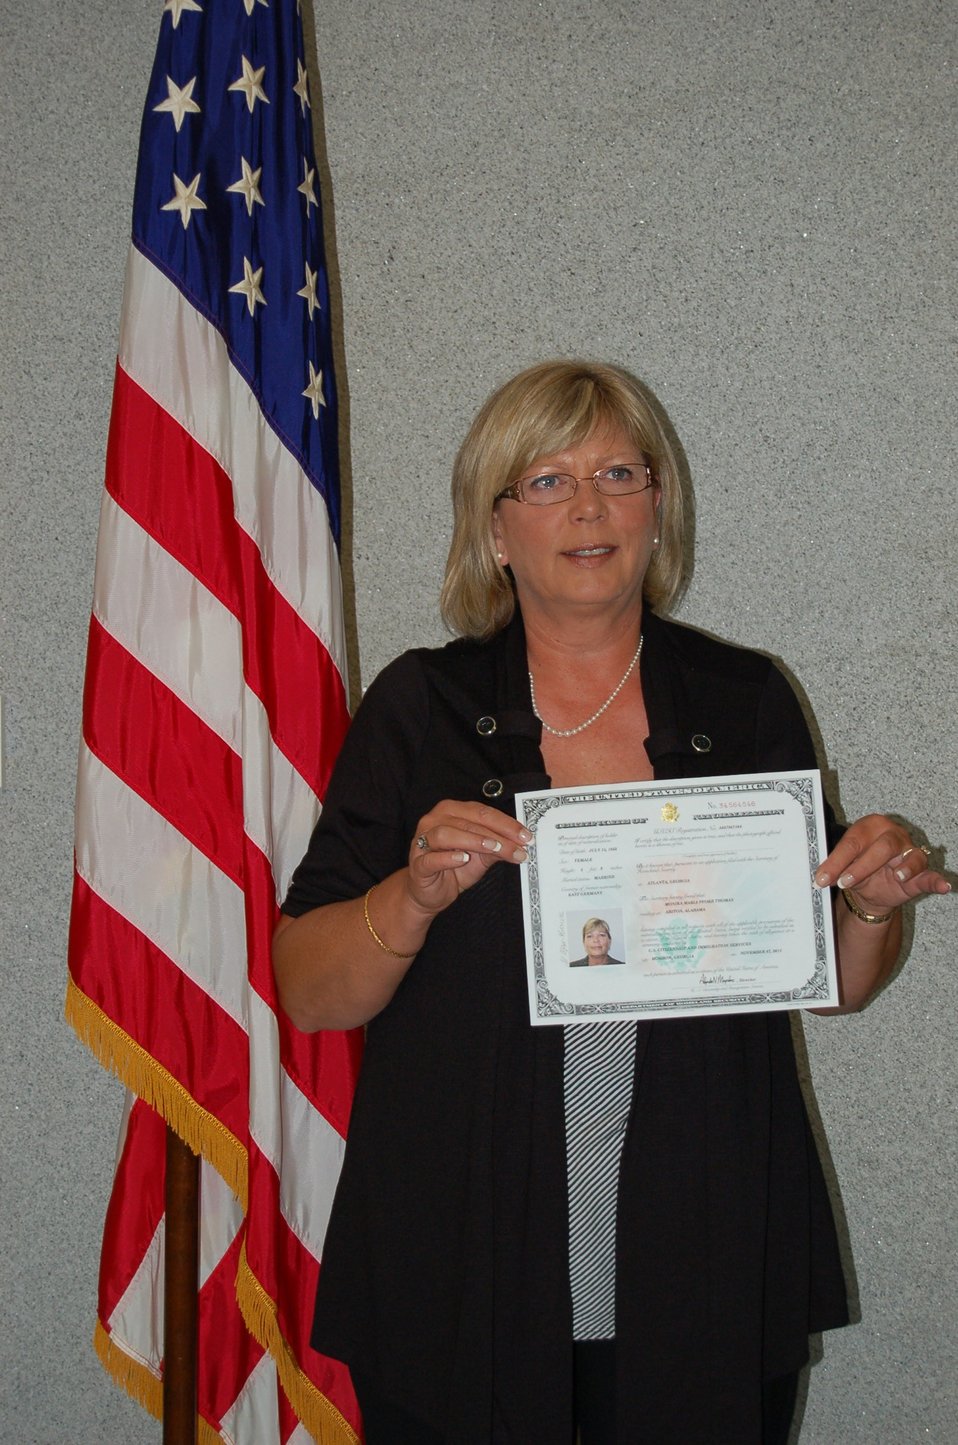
New Citizens